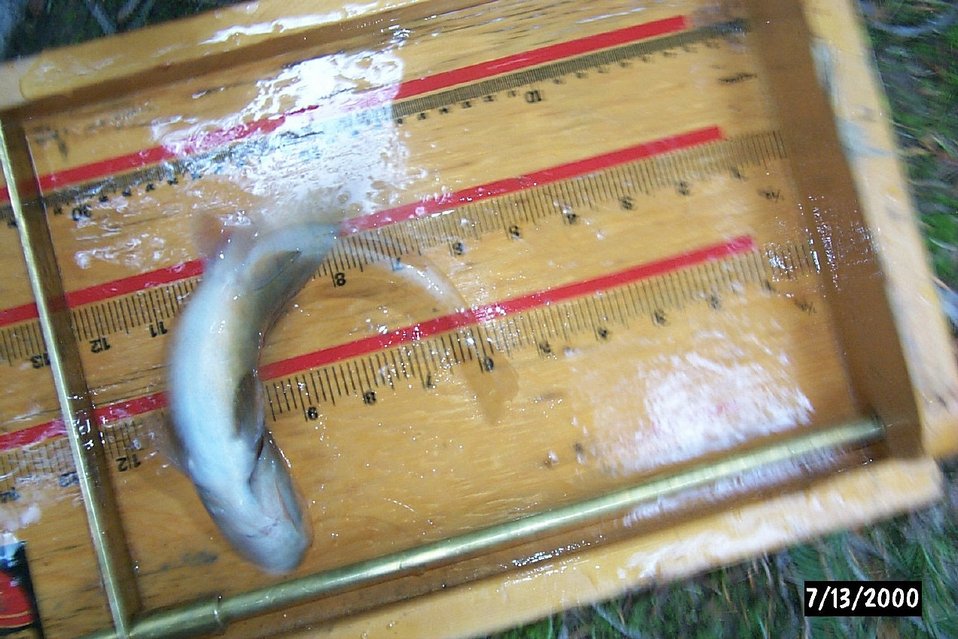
Flopping trout Salmon Field Office UCSC Upper Columbia Salmon Clearwater District